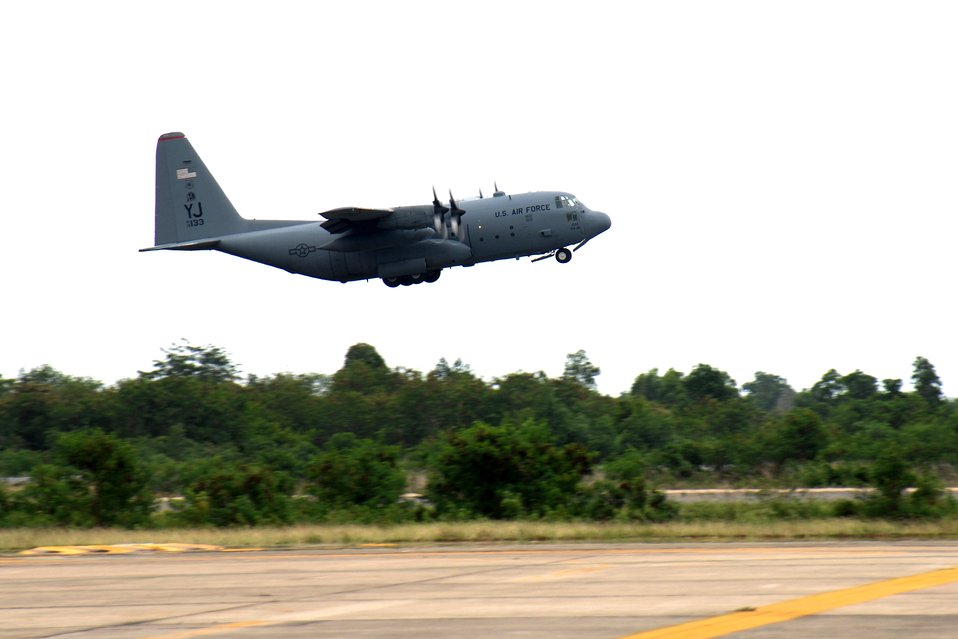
Aircrews stand by to continue Burma relief mission

A C-130 Hercules from Yokota Air Base, Japan, departs Utapao Thai Royal Navy Air Base in Thailand en route to Burma to provide humanitarian relief to victims of Cyclone Nargis.